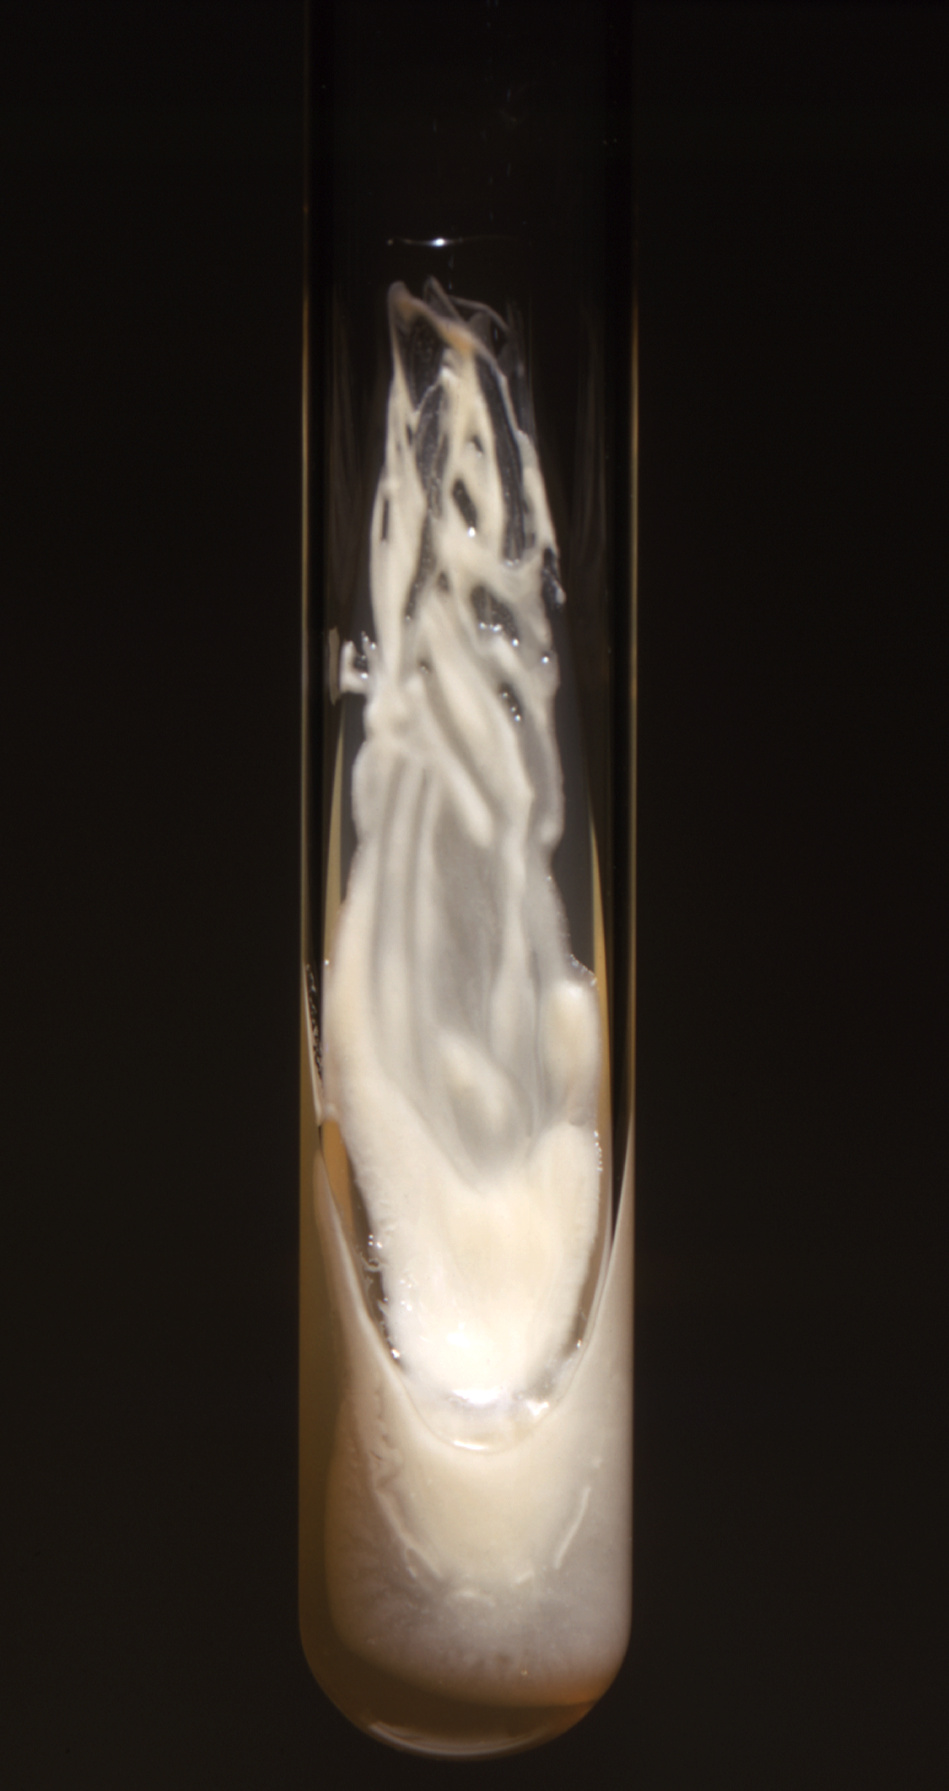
This 1971 image depicted a Sabourauds dextrose agar slant culture, which had cultivated a colony of Prototheca stagnora algal organisms. This alga lacks the presence of plastids, and is therefore, achlorophyllous.